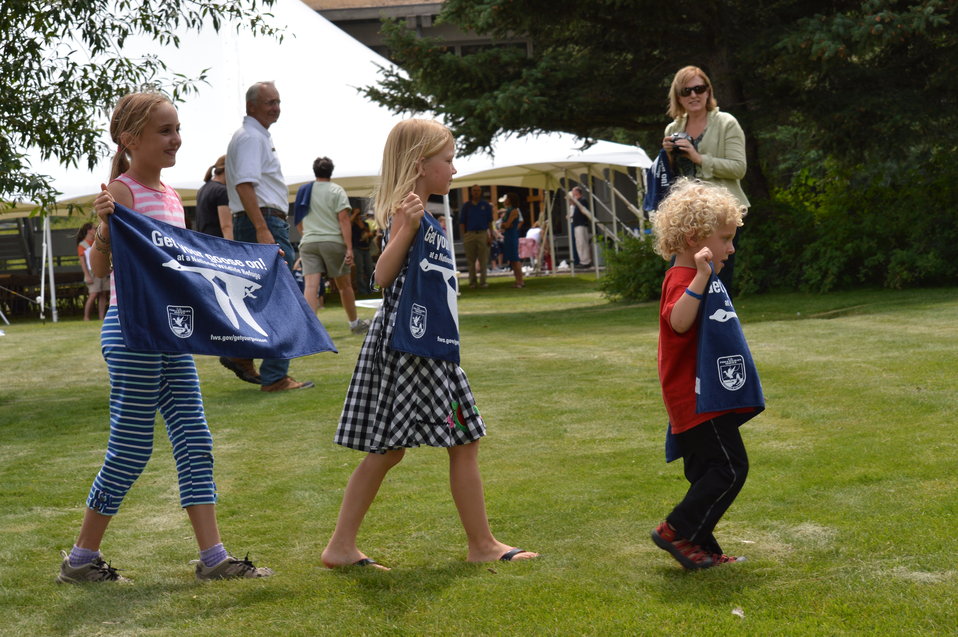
Get Your Goose On! - National Elk Refuge Style

On August 10, 2012 the U.S. Fish and Wildlife Service and Partners celebrated the 100 year anniversary of the establishment of the National Elk Refuge. In these photos, young attendees, along with Puddles the Blue Goose and the National Elk Refuge's mascot, showed us how to Get Your Goose On! with style.